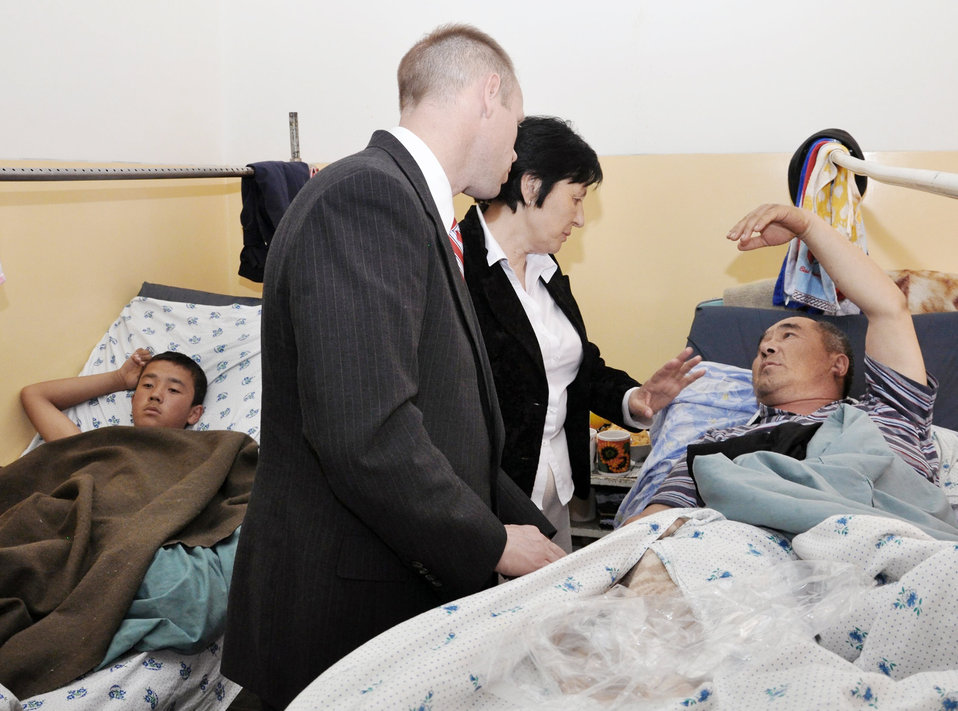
Airmen continue distributing medical supplies to Bishkek

Col. Blaine Holt (left) speaks to a wounded patient April 15, 2010, at the Center for Traumatology in Bishkek, Kyrgyzstan. Colonel Holt is the director of the Transit Center at Manas, Kyrgyzstan.